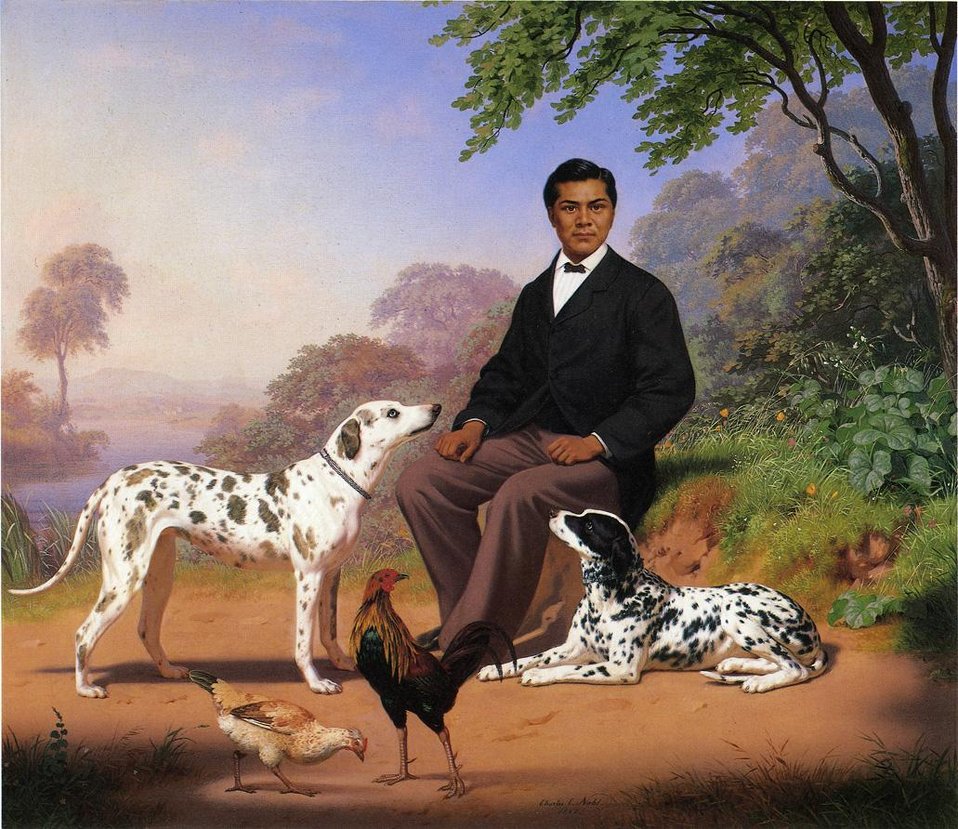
Charles Christian Nahl, Sacramento Indian with Dogs 1867